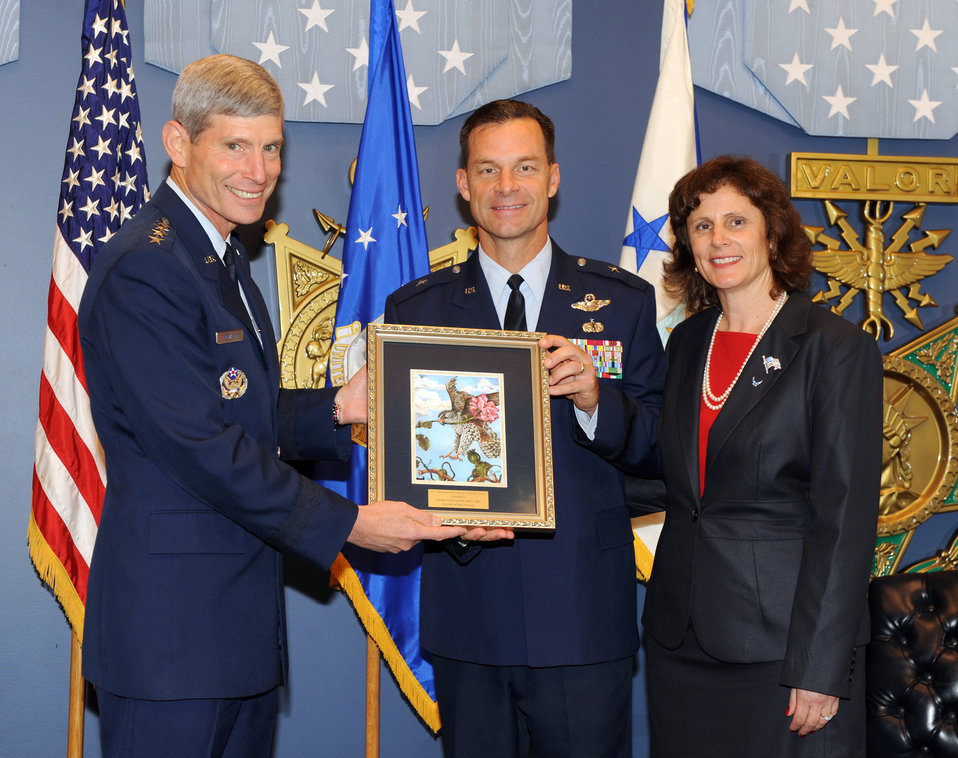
2011 Gen. and Mrs. Jerome F. O'Malley Award

Air Force Chief of Staff Gen. Norton Schwartz presents Brig. Gen. Mark and Sara Dillon with the traditional Gen. and Mrs. Jerome F. O’Malley Award legacy picture during a Pentagon ceremony Oct. 11, 2011, in Washington, D.C. The Dillons were honored with the award, presented annually to the wing commander and spouse whose contributions to the nation, Air Force and local community best exemplifies the highest ideals and positive leadership of a military couple in wing command positions.